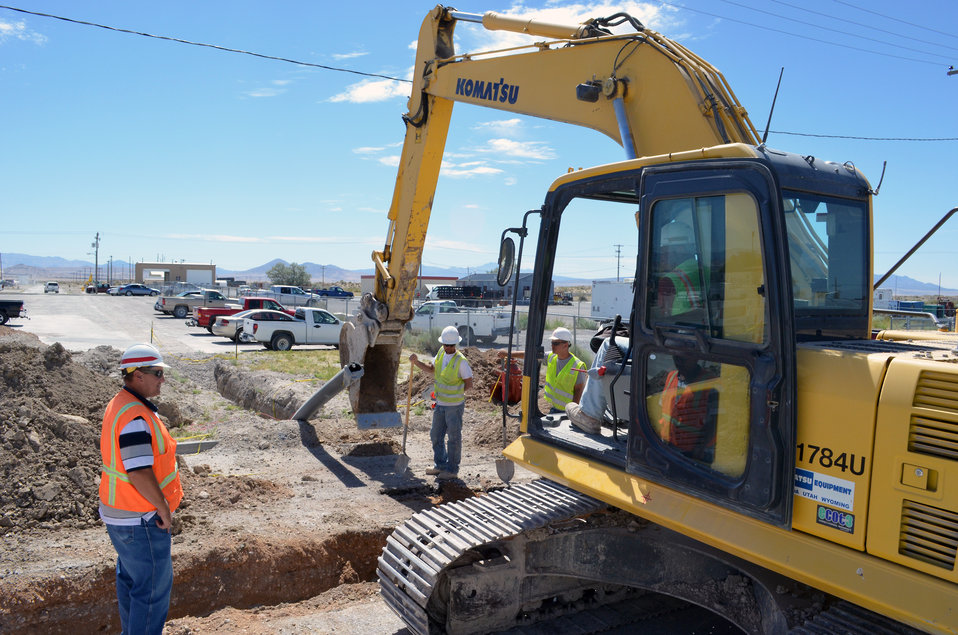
Water system project continues at Dugway Proving Grounds

Doug Bullock (left), a construction representative with the U.S. Army Corps of Engineers Sacramento District, speaks to contractors excavating a trench for new water lines at Dugway Proving Grounds, Utah, June 21, 2012. The work is part of an $11 million project to provide a new potable water system for the installation.